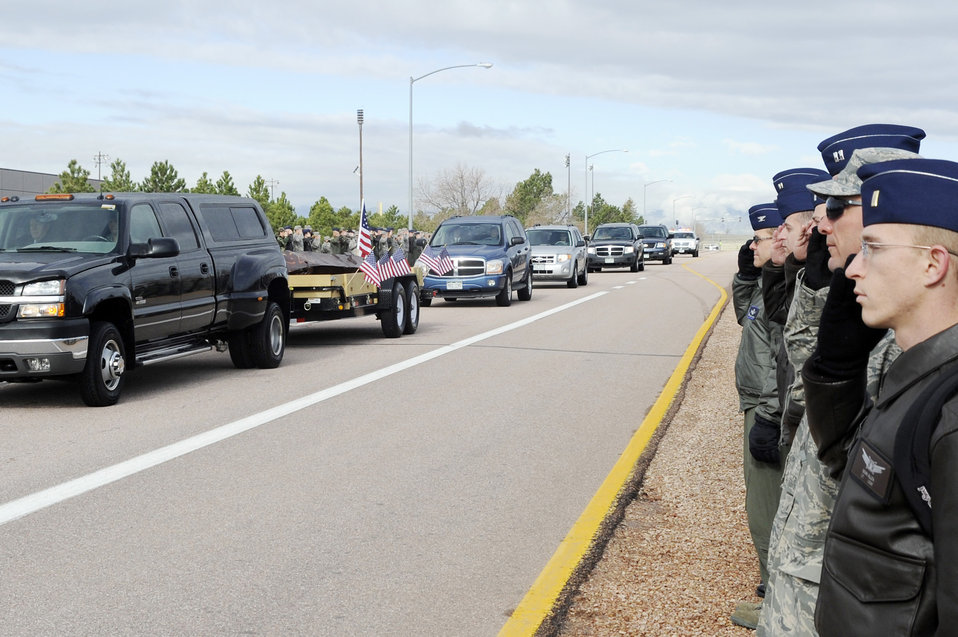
Future memorial for Schriever

Airmen salute as a beam from one of the collapsed towers of the World Trade Center arrives April 26, 2010, at Schriever Air Force Base, Colo.